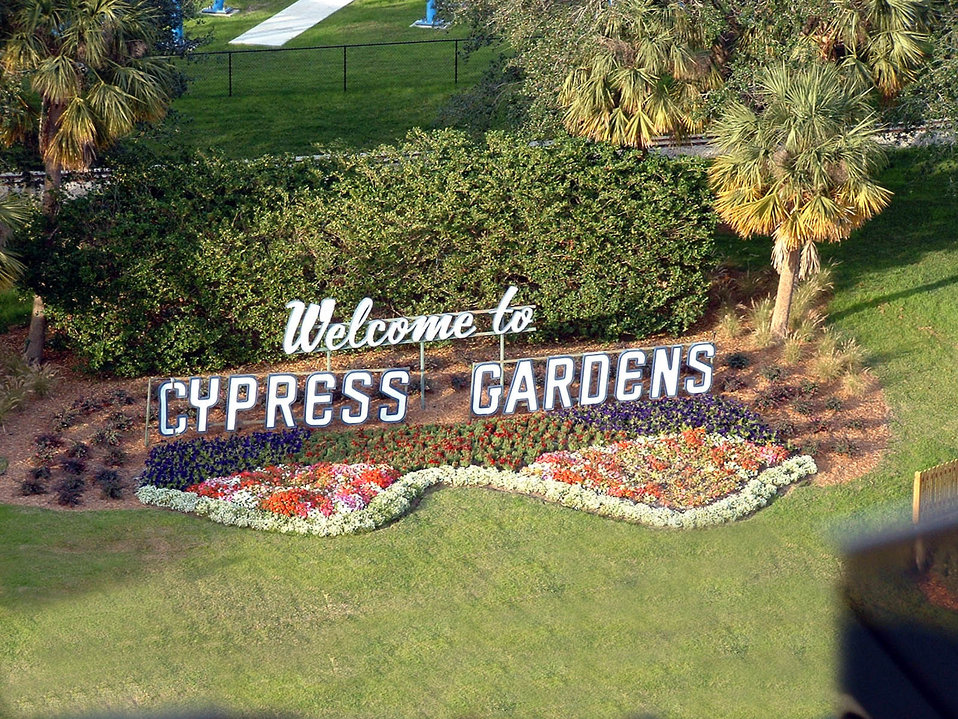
Photo taken by Brian Bruchey